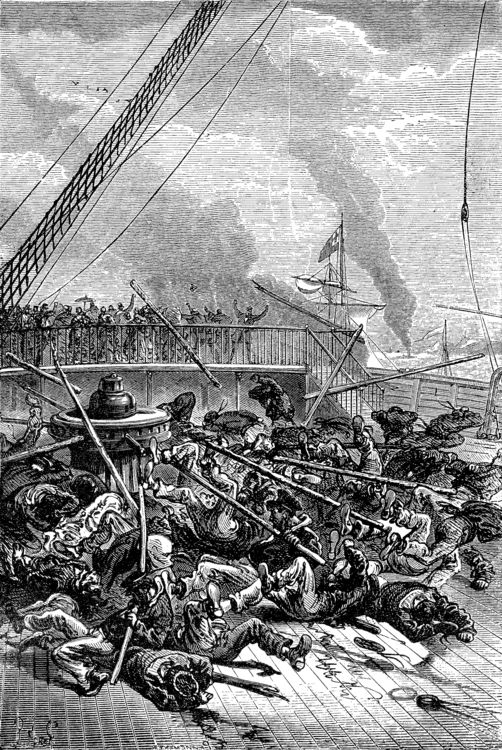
An illustration from Jules Verne's novel 'A Floating City' (1869) drawn by Jules Férat. Polski: Ilustracja powieści Juliusza Verne'a 'Pływające miasto' (1869) autorstwa Julesa Férata. Français : Jules Verne: 'Une Ville flottante' (1869), dessins par Jules Férat. Orginal text: Français : Tous les hommes disposés sur les barres avaient été renversés.